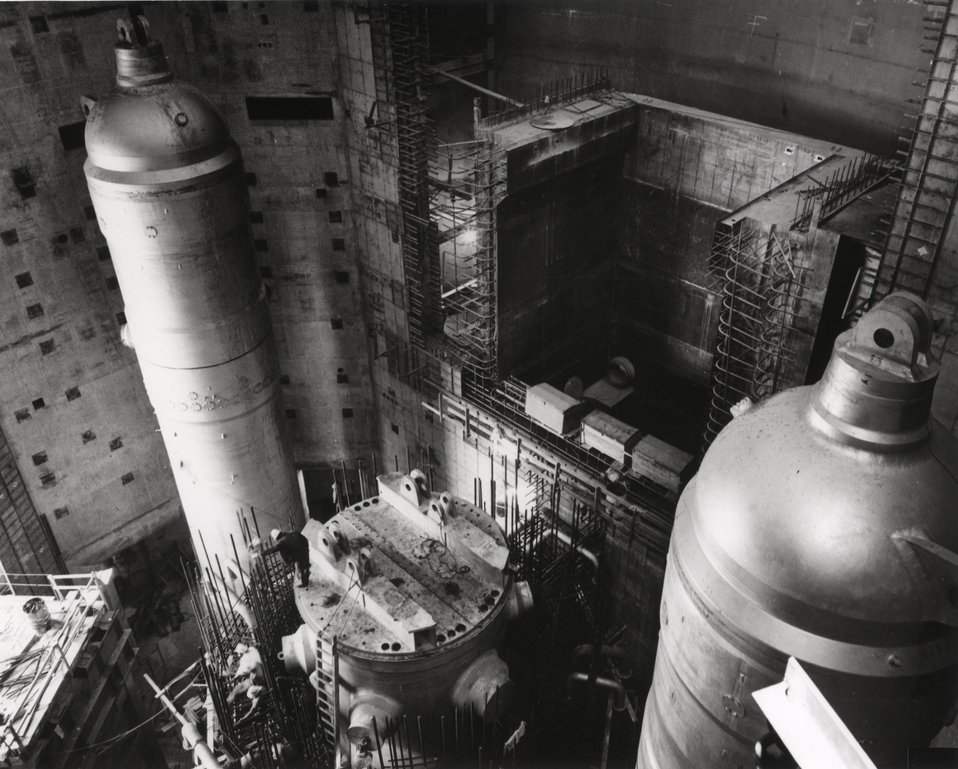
A nuclear reactor at the Oconee Nuclear Station is flanked by two 570-ton steam generators. Circa 1973.